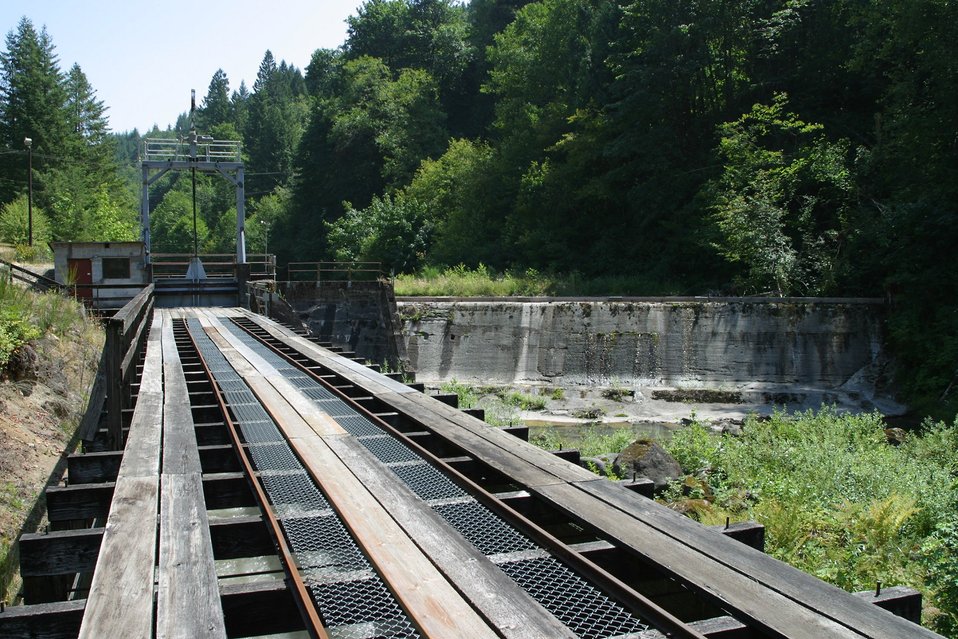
Little Sandy Dam and flume are scheduled to be removed in 2007.